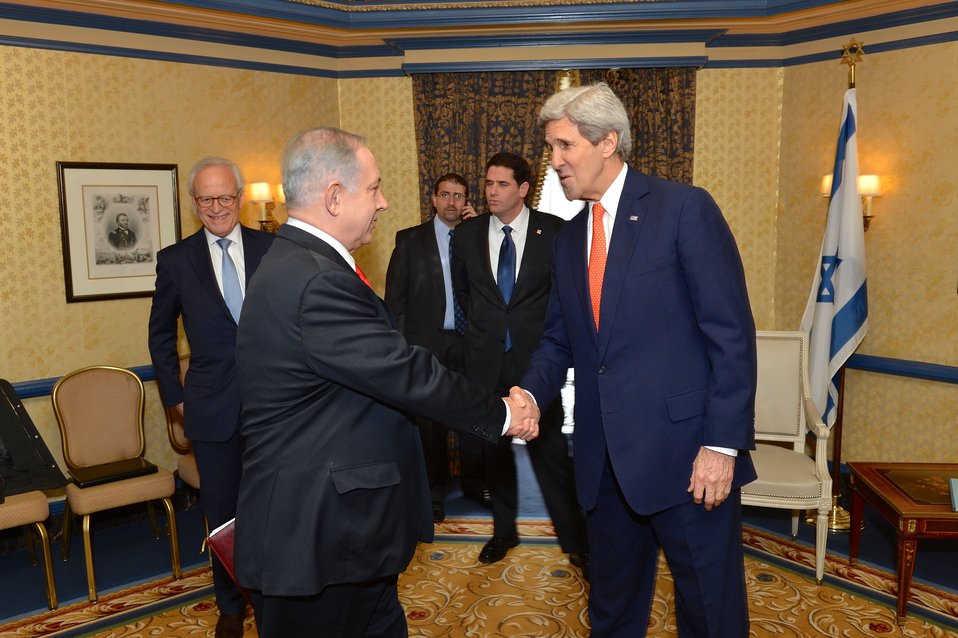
0303 kerSecretary Kerry Meets With Israeli Prime Minister Netanyahury netanyahu 1

U.S. Secretary of State John Kerry shakes hands with Israeli Prime Minister Benjamin Netanyahu in Washington, D.C., on March 3, 2014.